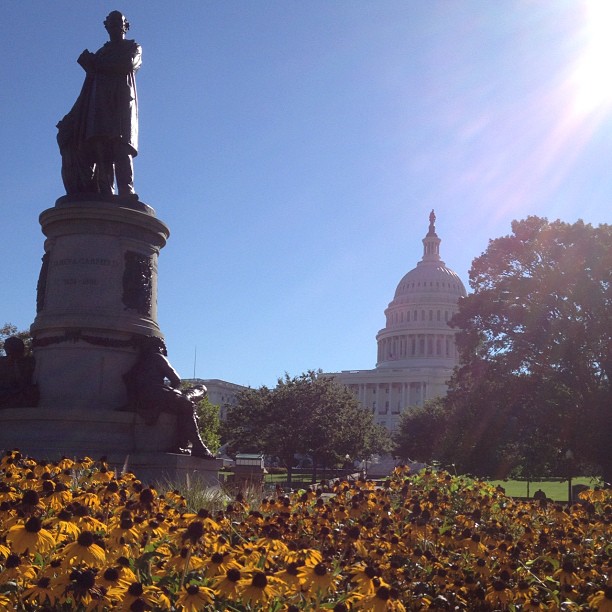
Beautiful July morning on Capitol grounds.